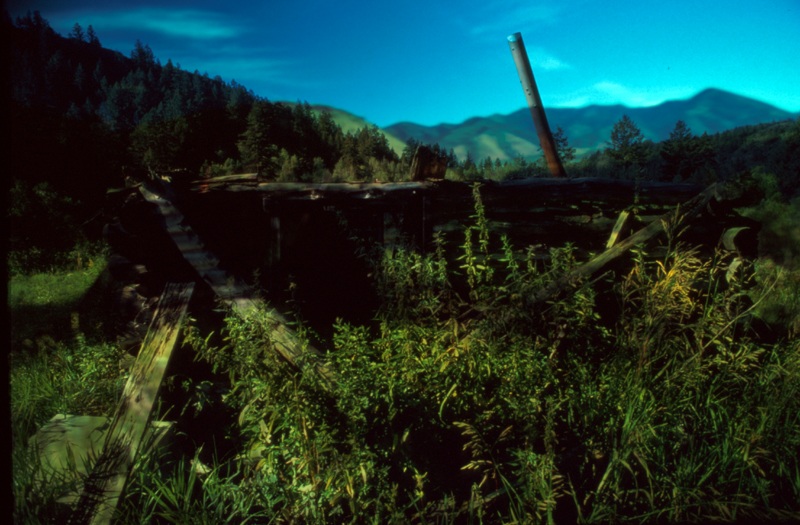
South Fork of the Snake River